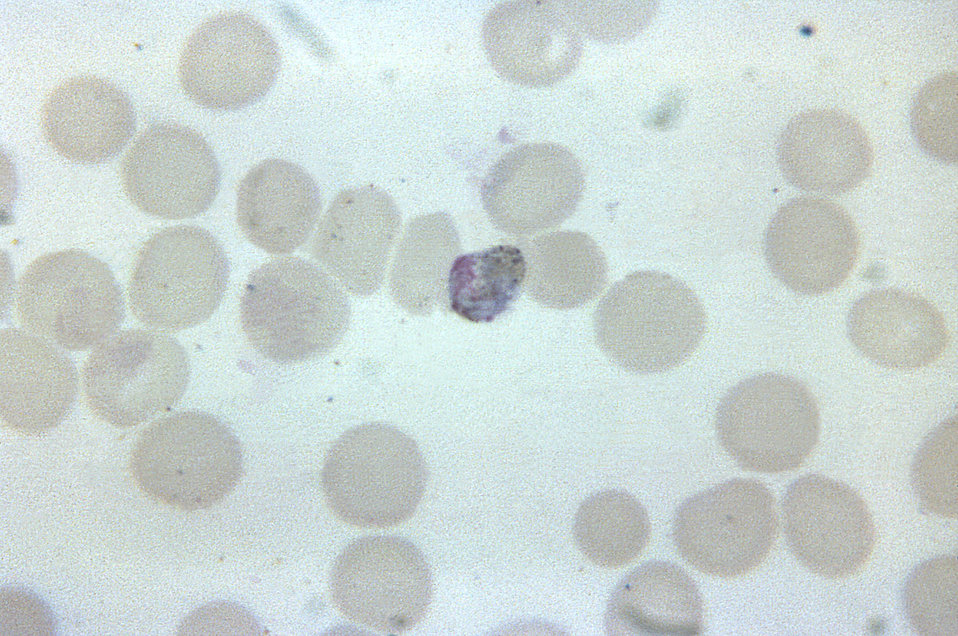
This thin film photomicrograph depicts a mature Plasmodium malariae trophozoite that resembles a macrogametocyte.